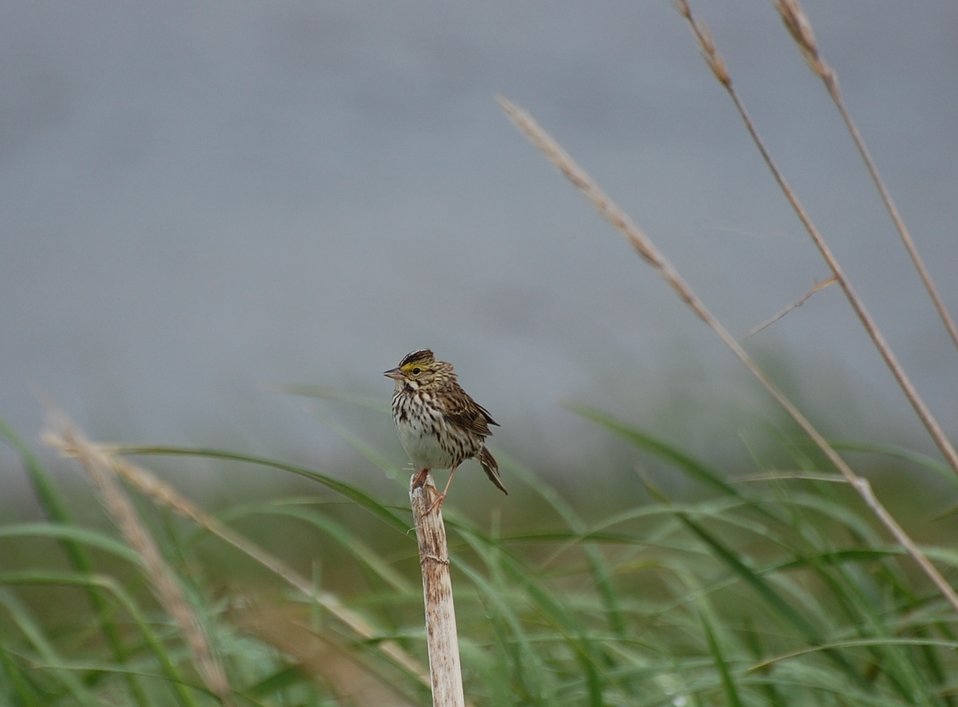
Savannah Sparro

Izembek National Wildlife Refuge